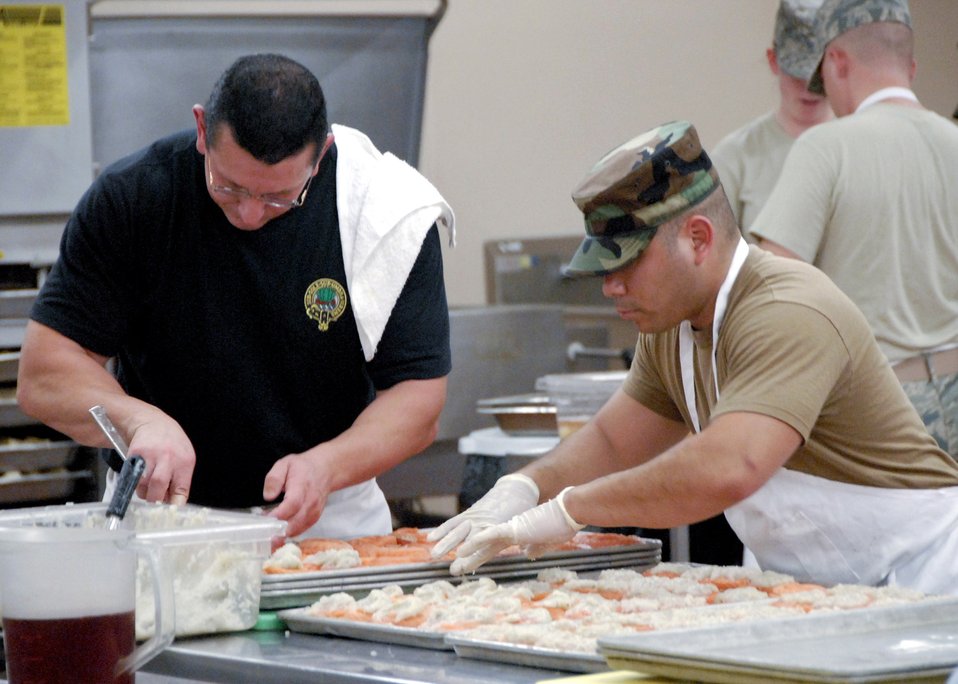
Airmen featured on Food Network

Staff Sgt. Mario Frank (right) spreads a paste on salmon as the Food Network's Chef Robert Irvine prepares salmon on another tray Sept. 22 at Sheppard Air Force Base, Texas. Chef Robert and a film crew from the